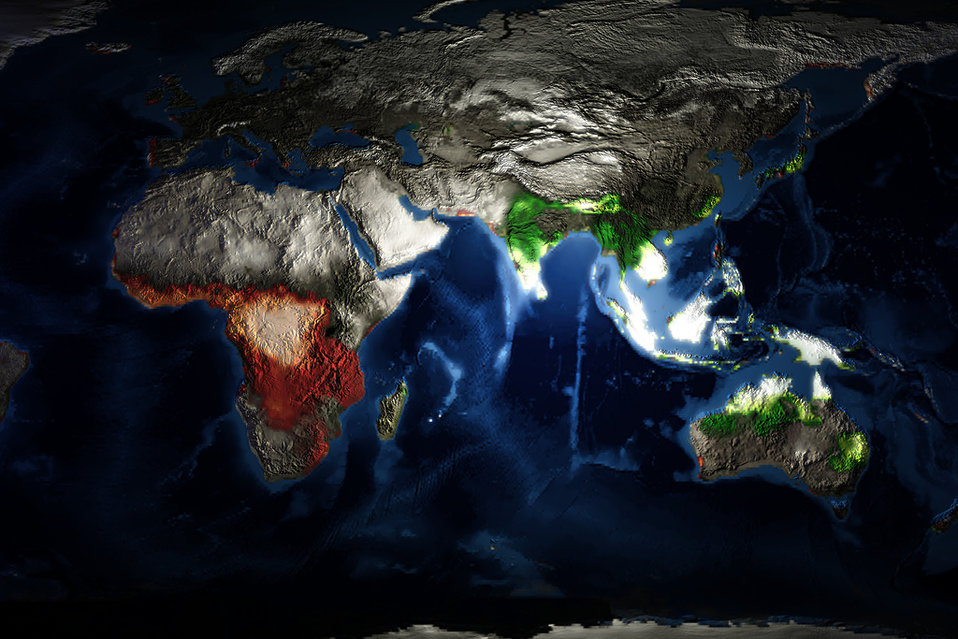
AT OAK RIDGE NATIONAL LABORATORY , AS THE SUN RISES OVER EASTERN EUROPE, THE INSTANTANEOUS NET ECOSYSTEM EXCHANGE OF CARBON DIOXIDE IS SHOWN IN THE EASTERN HEMISPHERE.

Strong uptake is shown in green-to-white colors and is strongest in the tropics. A net release of carbon dioxide to the atmosphere is shown in red-to-white colors and strongest over the Congo, where the sun is not shining. This image was produced from a Carbon-Land Model Intercomparison Project simulation performed as part of SciDAC2 project on National Center for Computational Sciences supercomputers.